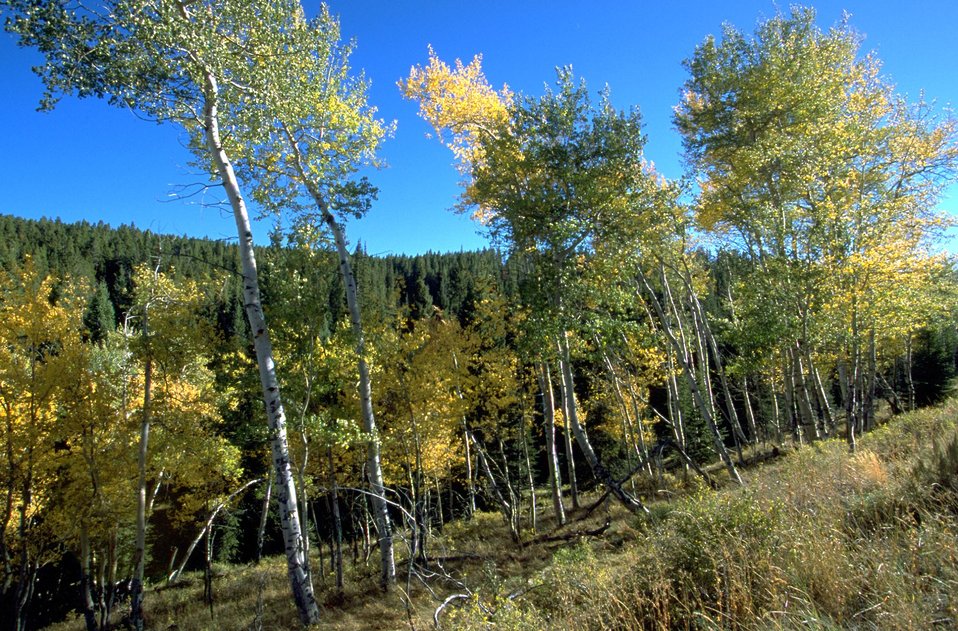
Aspen trees turning to fall colors